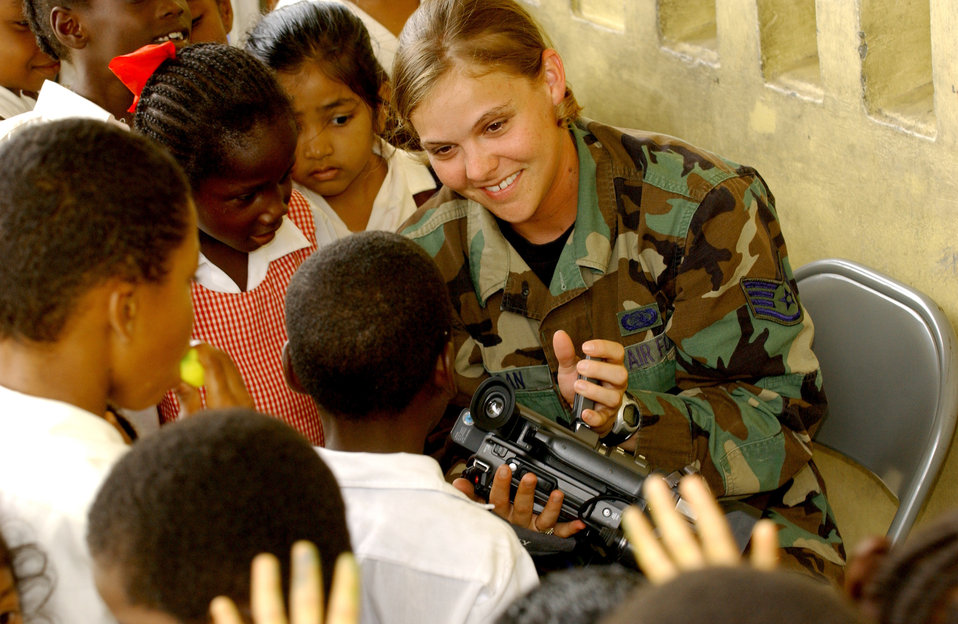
Helping in Guyana

TIMERHRI, Guyana -- Students from a primary school here watch as Staff Sgt. Tonia Morgan plays a video of them at a construction site June 23 during exercise New Horizons 2004-Guyana. About 200 U.S. Airmen, Soldiers and Sailors are participating in the four-month joint training exercise co-sponsored by U.S. Southern Command and the Guyana defense force. A combined team of engineers and medics is working on construction projects and medical-training activities. Sergeant Morgan is assigned to the 1st Combat Camera Squadron based at Charleston Air Force Base, S.C.